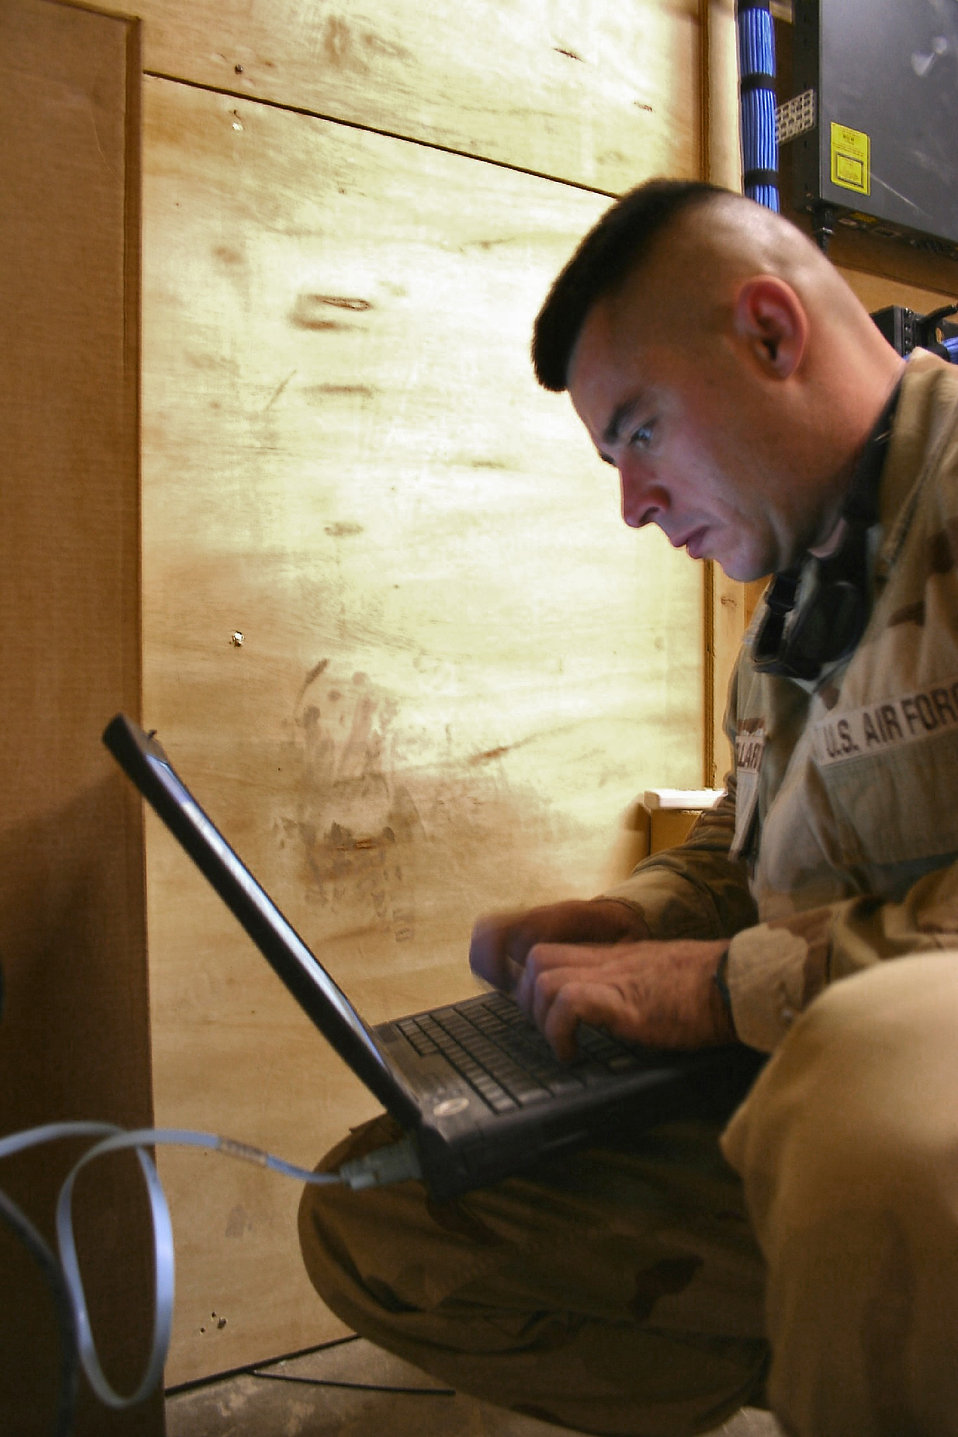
Communicators

KANDAHAR AIR FIELD, Afghanistan (AFPN) -- Staff Sgt. Jeremy Bellard programs an Internet switch to prepare for the relocation of personnel from both the Kandahar Air Mobility Command passenger terminal and air terminal operations center. As U.S. forces prepare to return control of the airport terminal and tower to Afghan control, combat communicators have installed more than a mile of copper and fiber cabling. Sergeant Bellard, from Church Point, La., is deployed from the Hammond Air National Guard Station in Hammond, La.